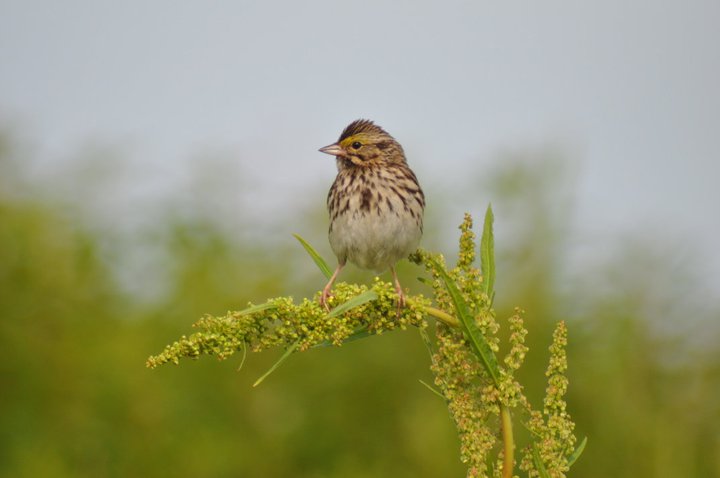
Savannah Sparrow

A Savannah sparrow at the Nantucket National Wildlife Refuge, MA.